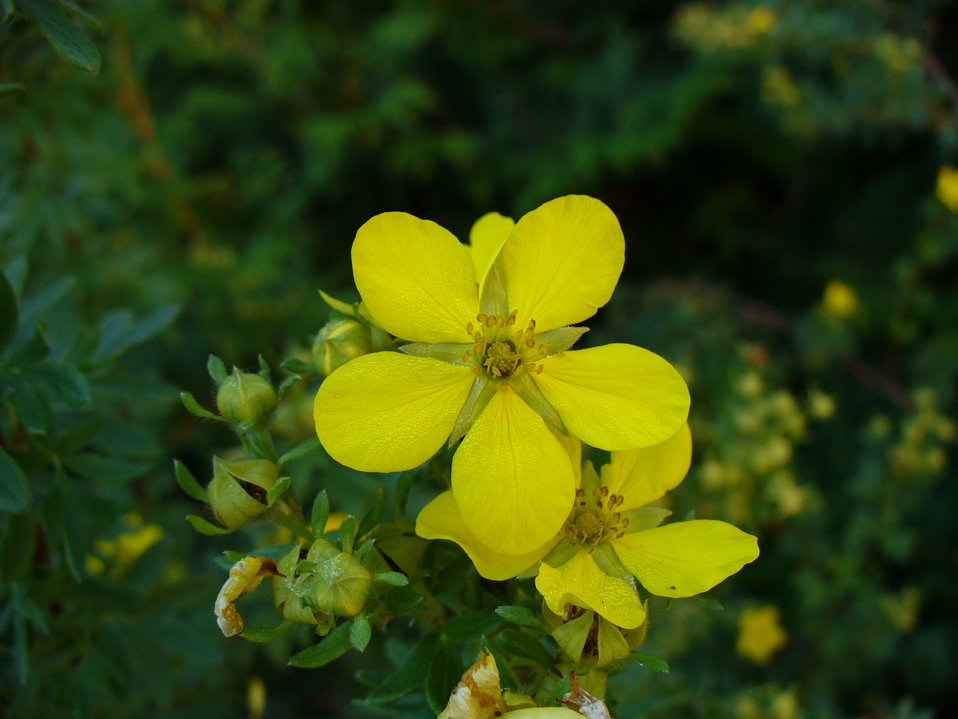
I am the originator of this photo. I hold the copyright. I release it to the public domain. This photo depicts a flower.